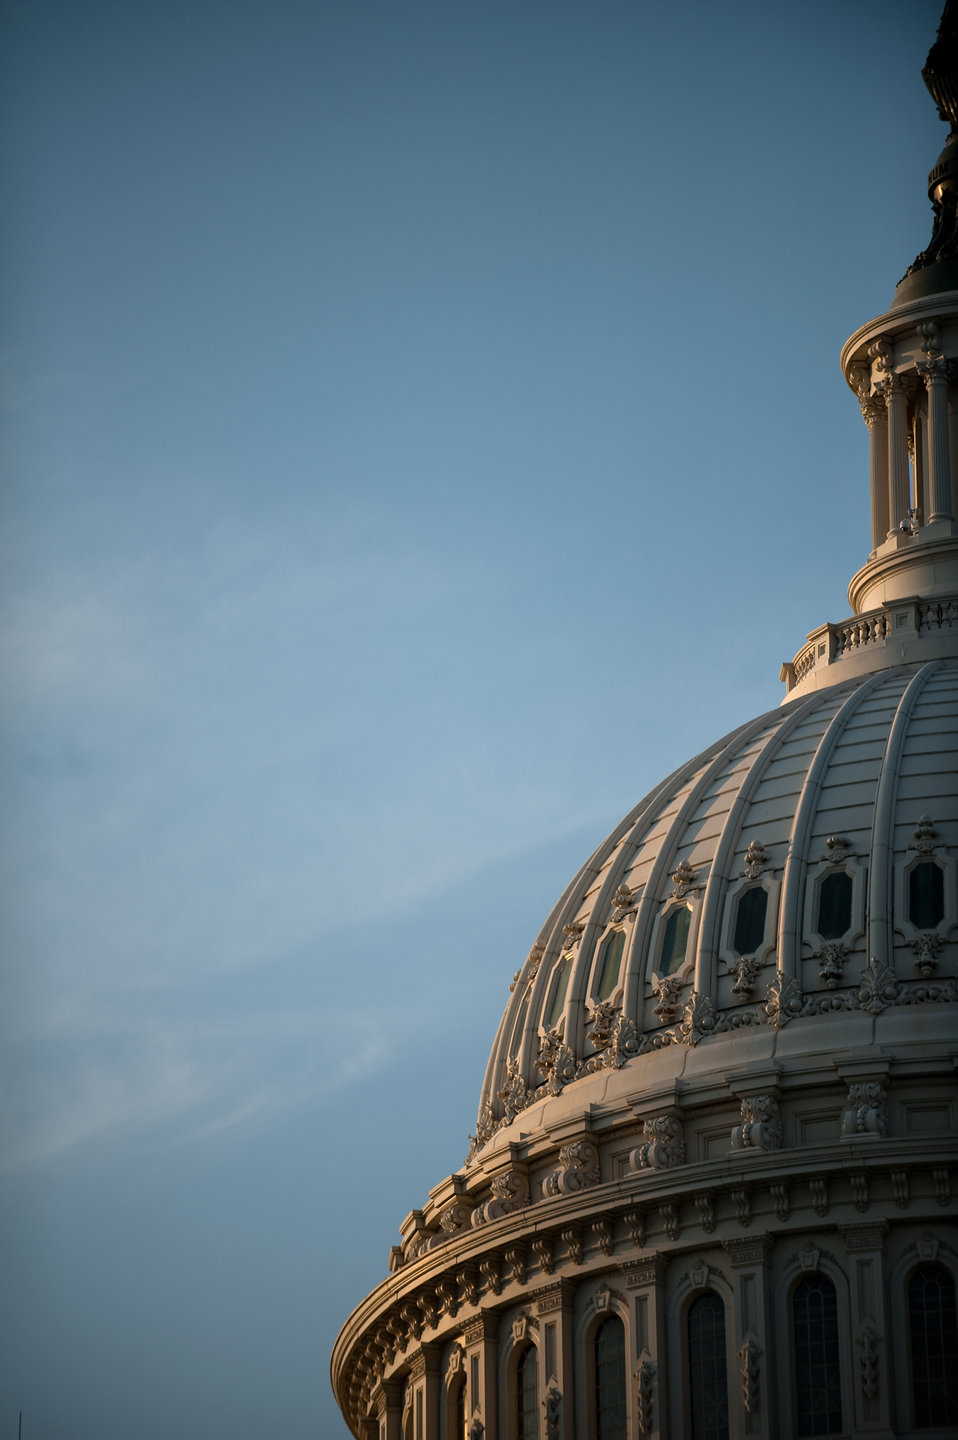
The Capitol Dome - August 2009